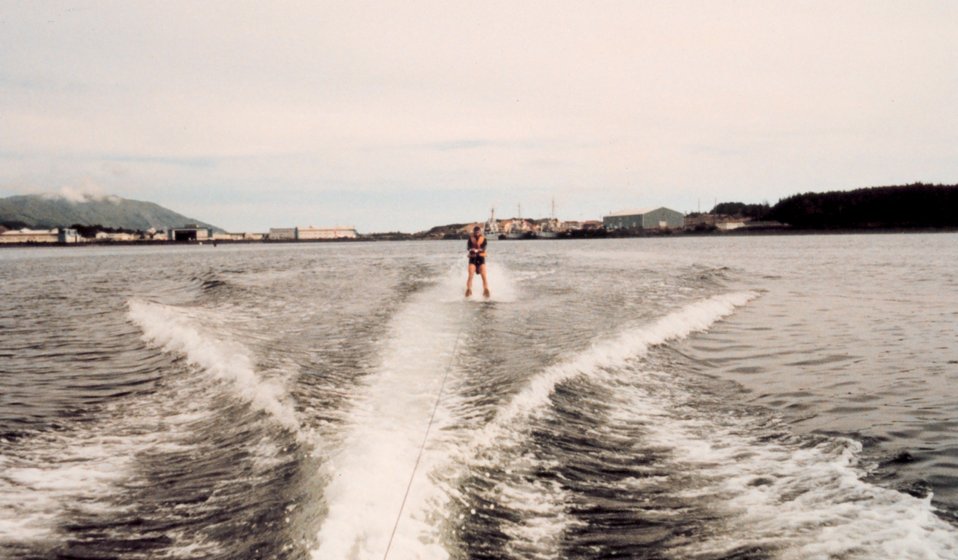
Water skiing in Womens Bay near the Coast Guard Base.